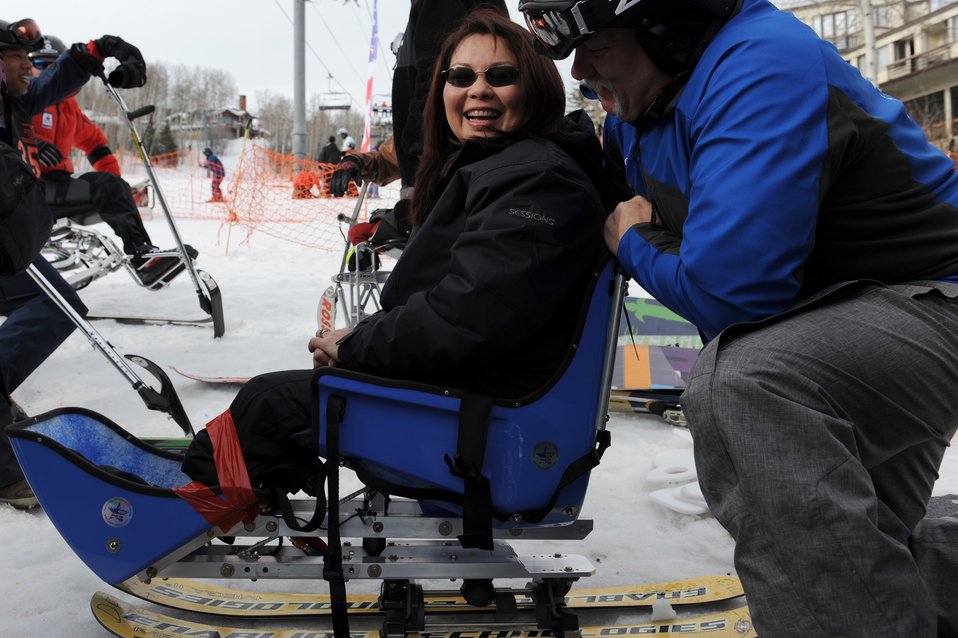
Assistant VA secretary, U.S. Olympians join veterans on ski slopes

Tammy Duckworth laughs as she gets the chance to ski with Bode Miller, Casey Puckett and Andy Finch March 31, 2010, during the 24th National Disabled American Veterans Winter Sports Clinic in Snowmass Village, Colo. Bode is an Olympic Gold Medalist, Puckett is an Olympian and Finch is an Olympian snowboarder. Mrs. Duckworth is the assistant secretary of Veterans Affairs. The event is sponsored by the Department of Veterans Affairs and Disabled American Veterans.